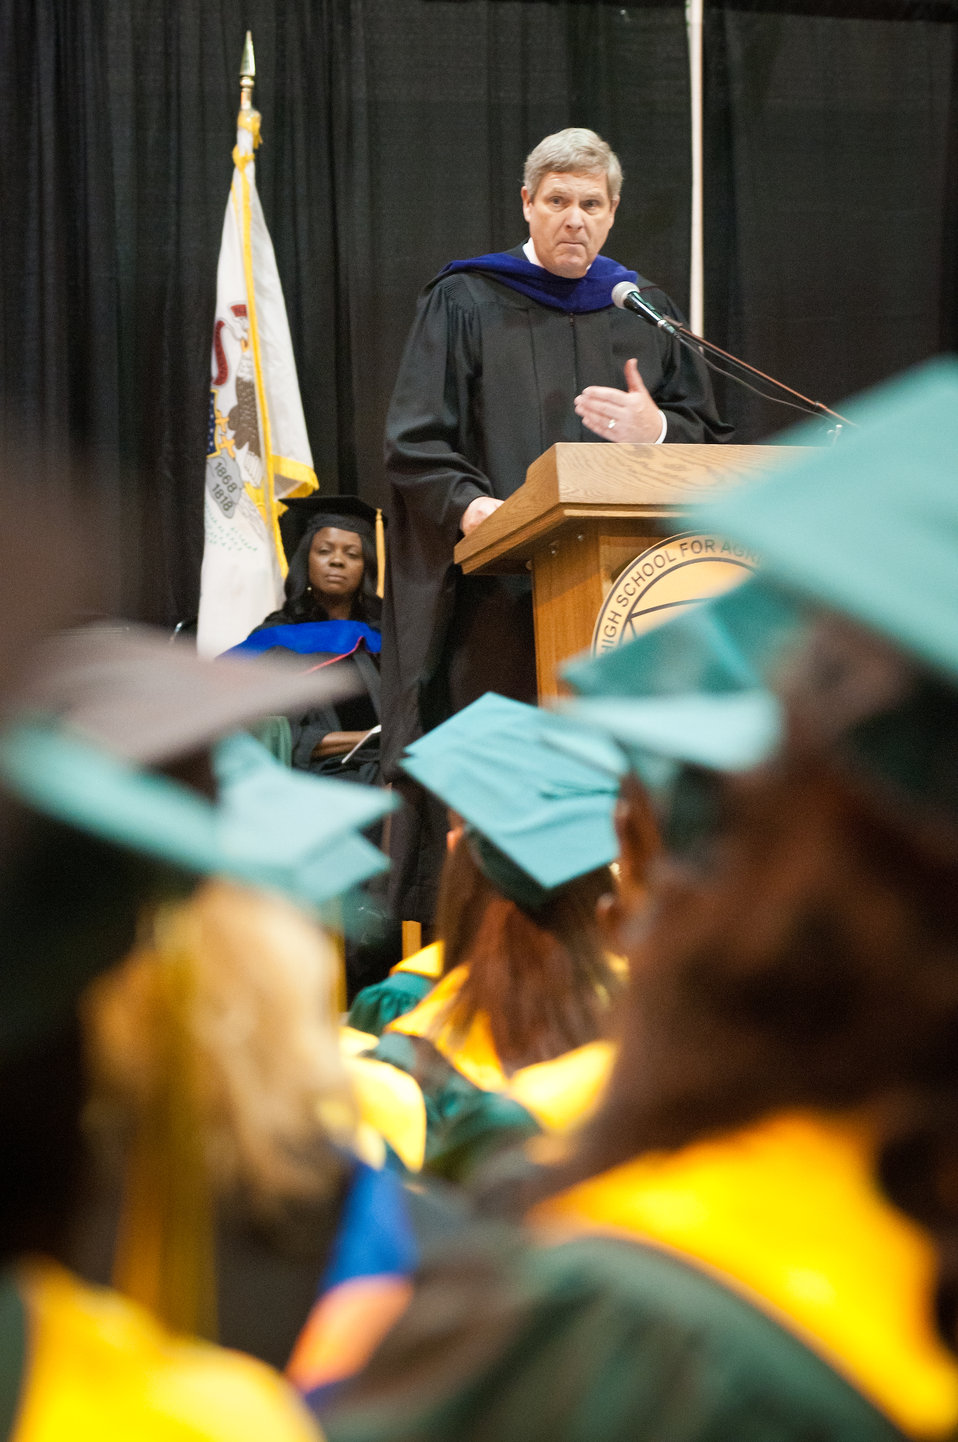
Agriculture Secretary Tom Vilsack delivers the 2012 commencement address at the Chicago High School for Agricultural Sciences in Chicago, Illinois on Friday, June 8, 2012. Secretary Vilsack discussed innovation in the food and agricultural industries and the importance of the American agriculture sector in expanding economic opportunity and creating jobs in communities throughout the country.